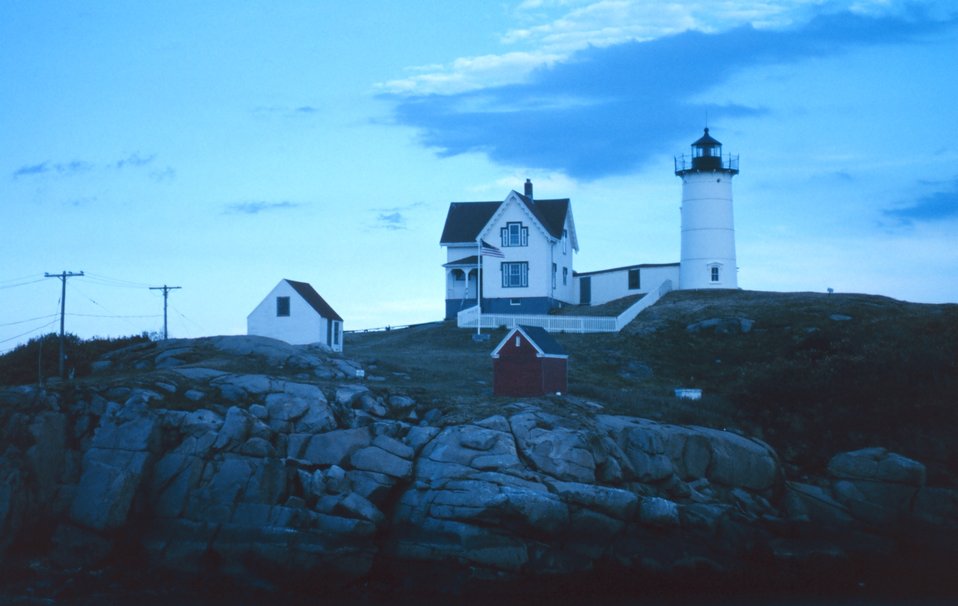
Nubble Lighthouse